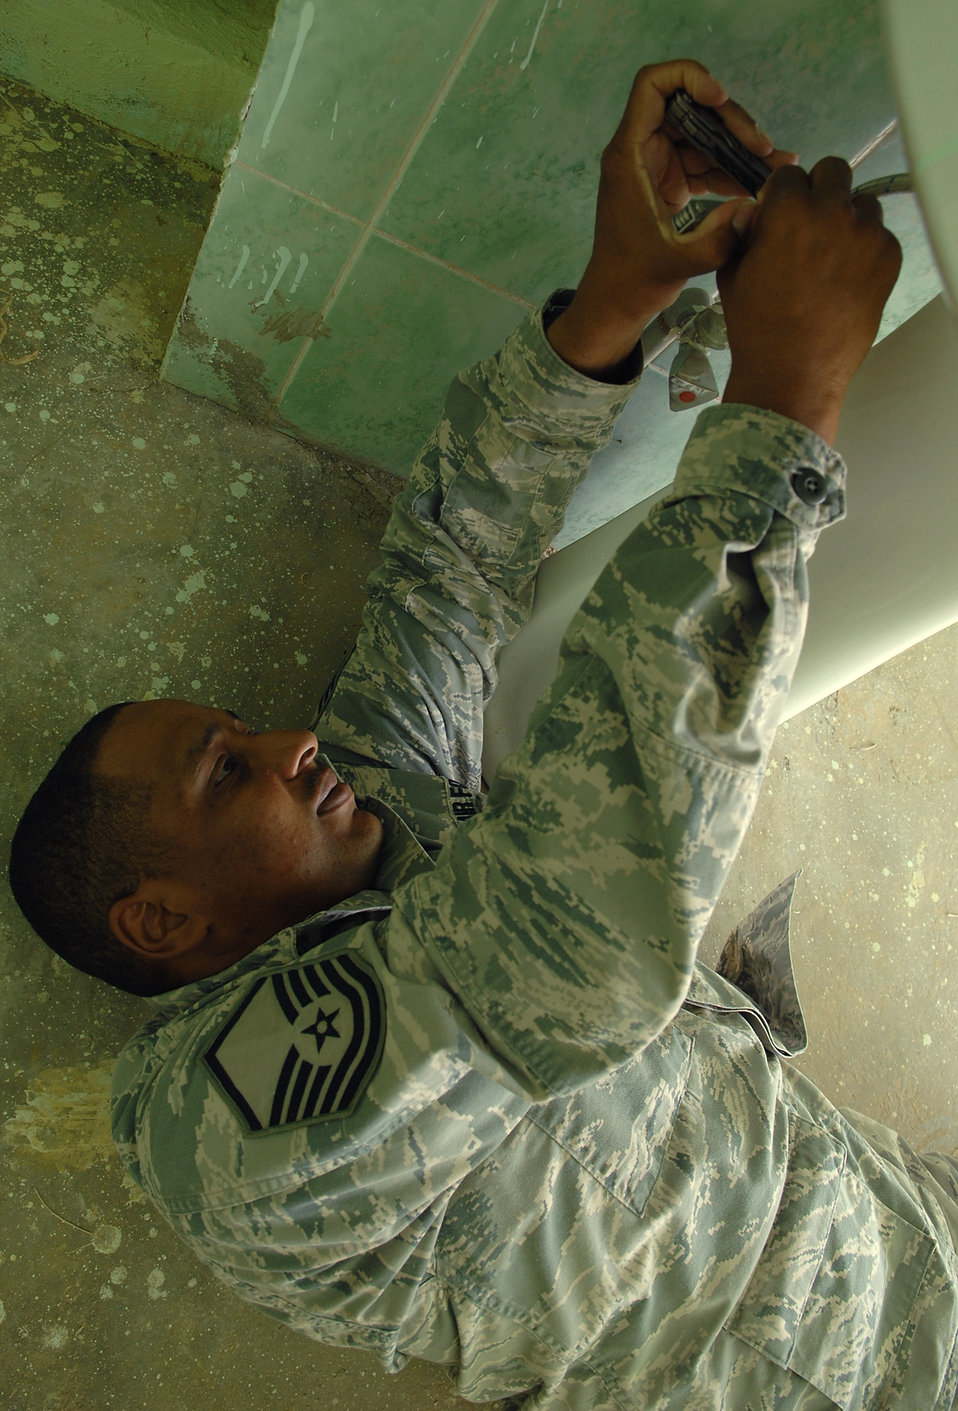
American, Iraqi Airmen partner to restore Sultan Saqi shrine

KIRKUK REGIONAL AIR BASE, Iraq – In a building adjacent to the Sultan Saqi Shrine here, Master Sgt. Todd McGee, 506th Expeditionary Civil Engineer Squadron plumber, tightens a section of a pipe under a bathroom sink. The Wahoo, Neb., native deployed from Elmendorf Air Force Base, Alaska, upgraded the building’s water system, and repaired commodes and sinks in this building as a part of partnership with Iraqi Airmen to restore two structures located in the Sultan Saqi cemetery.